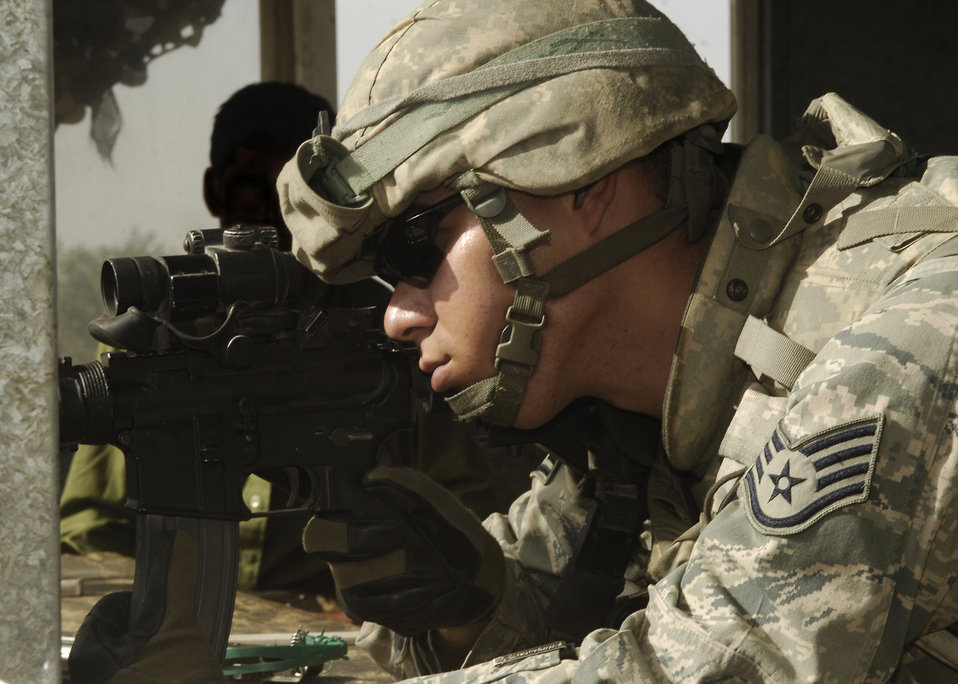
Lock and load

Staff Sgt. Steven Lugo-Velez protects the perimeter of Bagram Airfield, Afghanistan. Sergeant Lugo-Velez is originally from the Bronx, N.Y., and is deployed from Edwards Air Force Base, Calif. He is assigned to the 455th Expeditionary Security Forces Squadron.